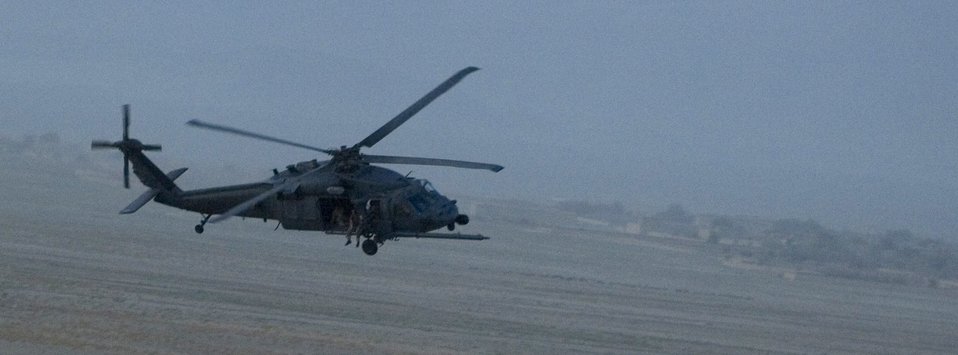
HH-60Gs integrate with Army AH-64s for war missions

An HH-60G Pave Hawk conducts combat search and rescue training mission Sept. 25 near Bagram Air Field, Afghanistan. The training mission was conducted with support from the Army's AH-64 Apaches in an effort to integrate operations in high-threat environments.